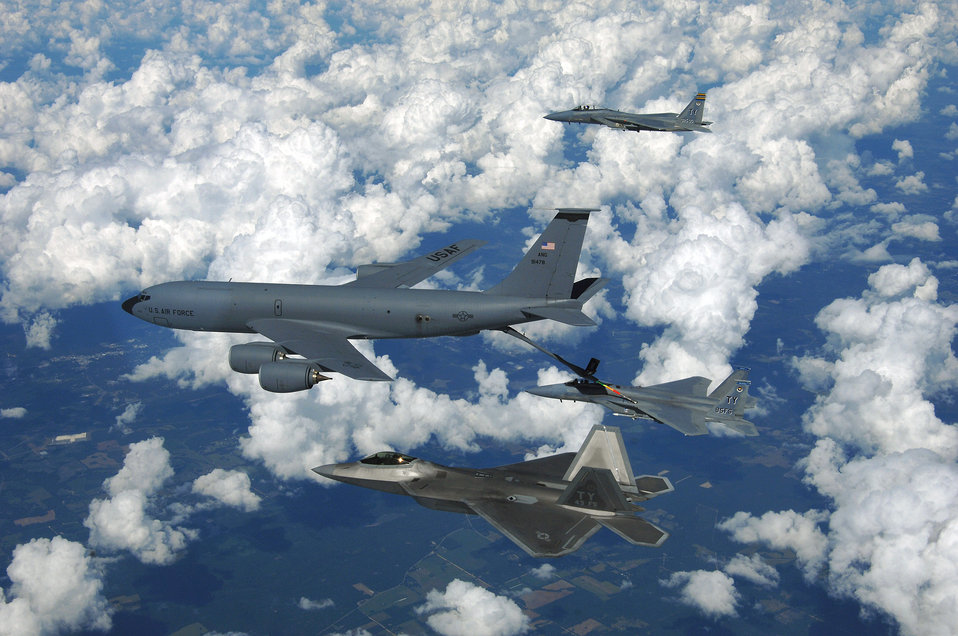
Gas and go

A Mississippi Air National Guard's KC-135 Stratotanker refuels an F-15 Eagle Sept. 22 over eastern Florida as another F-15 and an F-22 Raptor from Tyndall AFB, Fla., wait their turn.